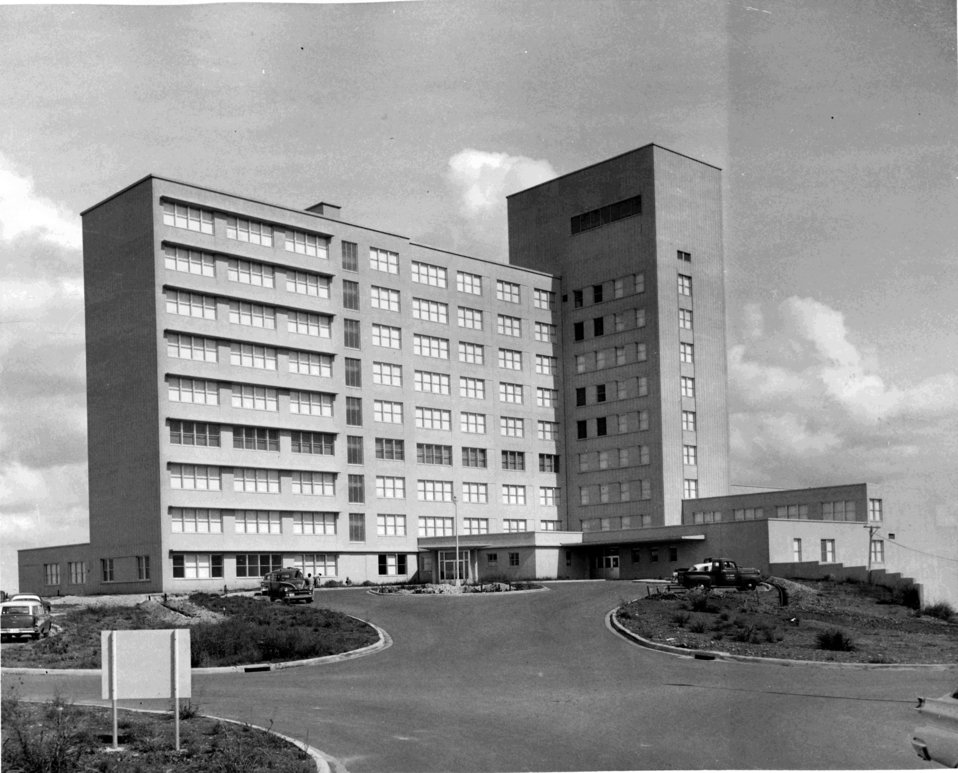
50 years of medical excellence

Wilford Hall Medical Center, shown as it looked in 1957, is now the Air Force's largest medical facility, providing complete medical care to military healthcare beneficiaries in the United States as well as specialized care to patients referred from all over the world.